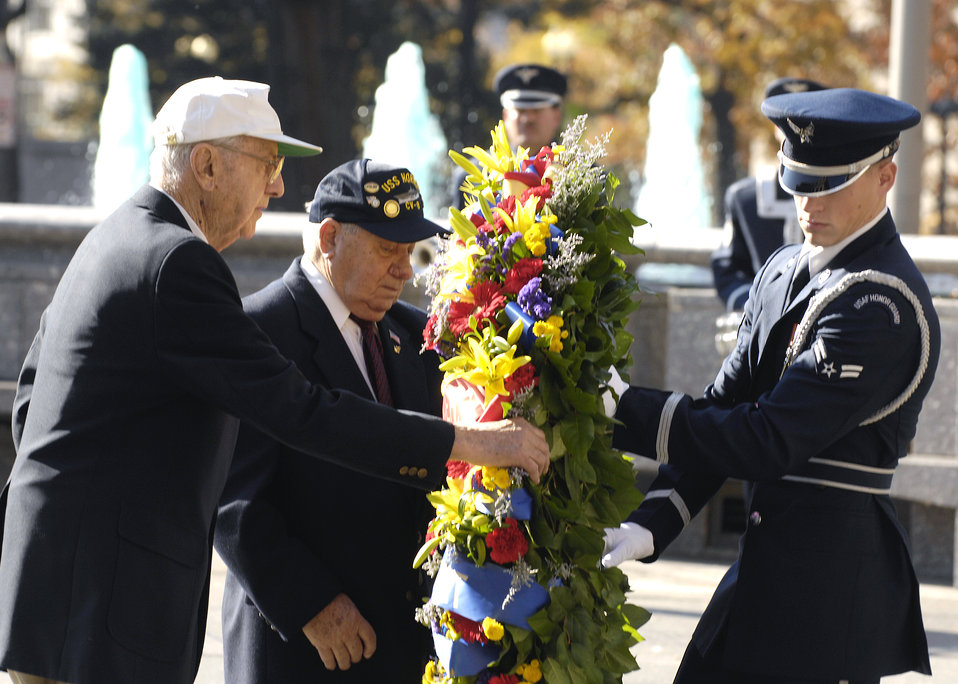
Doolittle Raiders visit Washington Airmen, memorials

Retired Maj. Gen. David Jones and Philip Antoniello lay a wreath in honor of the USS Hornet at the Navy Memorial in Washington Nov. 9. On April 18, 1942, the Doolittle Raiders, led by then Lt. Col. Jimmy Doolittle, became the first to bombard Japan following the attack on Pearl Harbor. The Doolittle Raiders have celebrated their victory for the past 64 years.